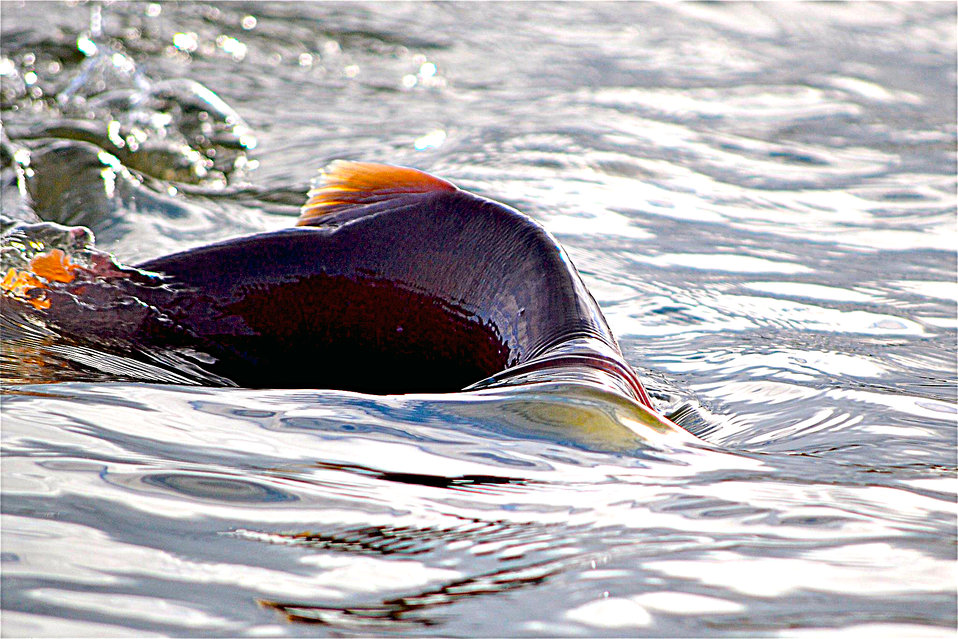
Bluebill Lake sockeye

A male looking to spawn in Bluebill Lake in Izembek National Wildlife Refuge.